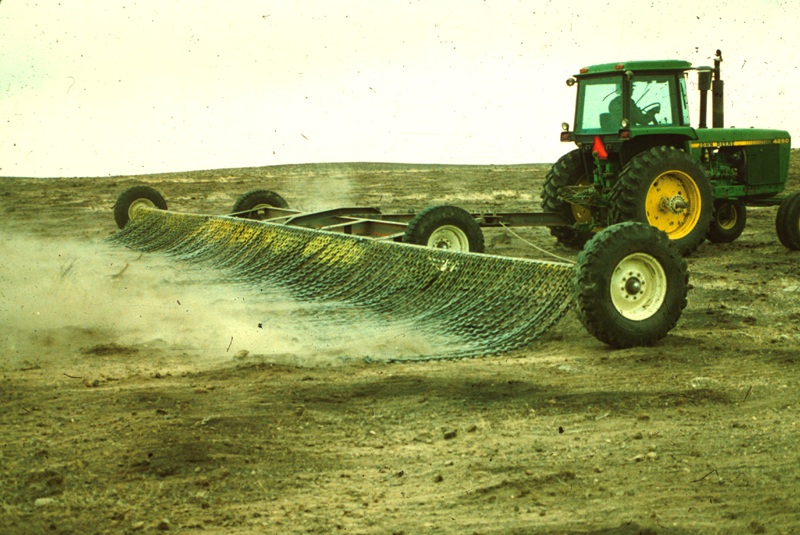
Chain Harrow Range Restoration Project Lower Snake River District